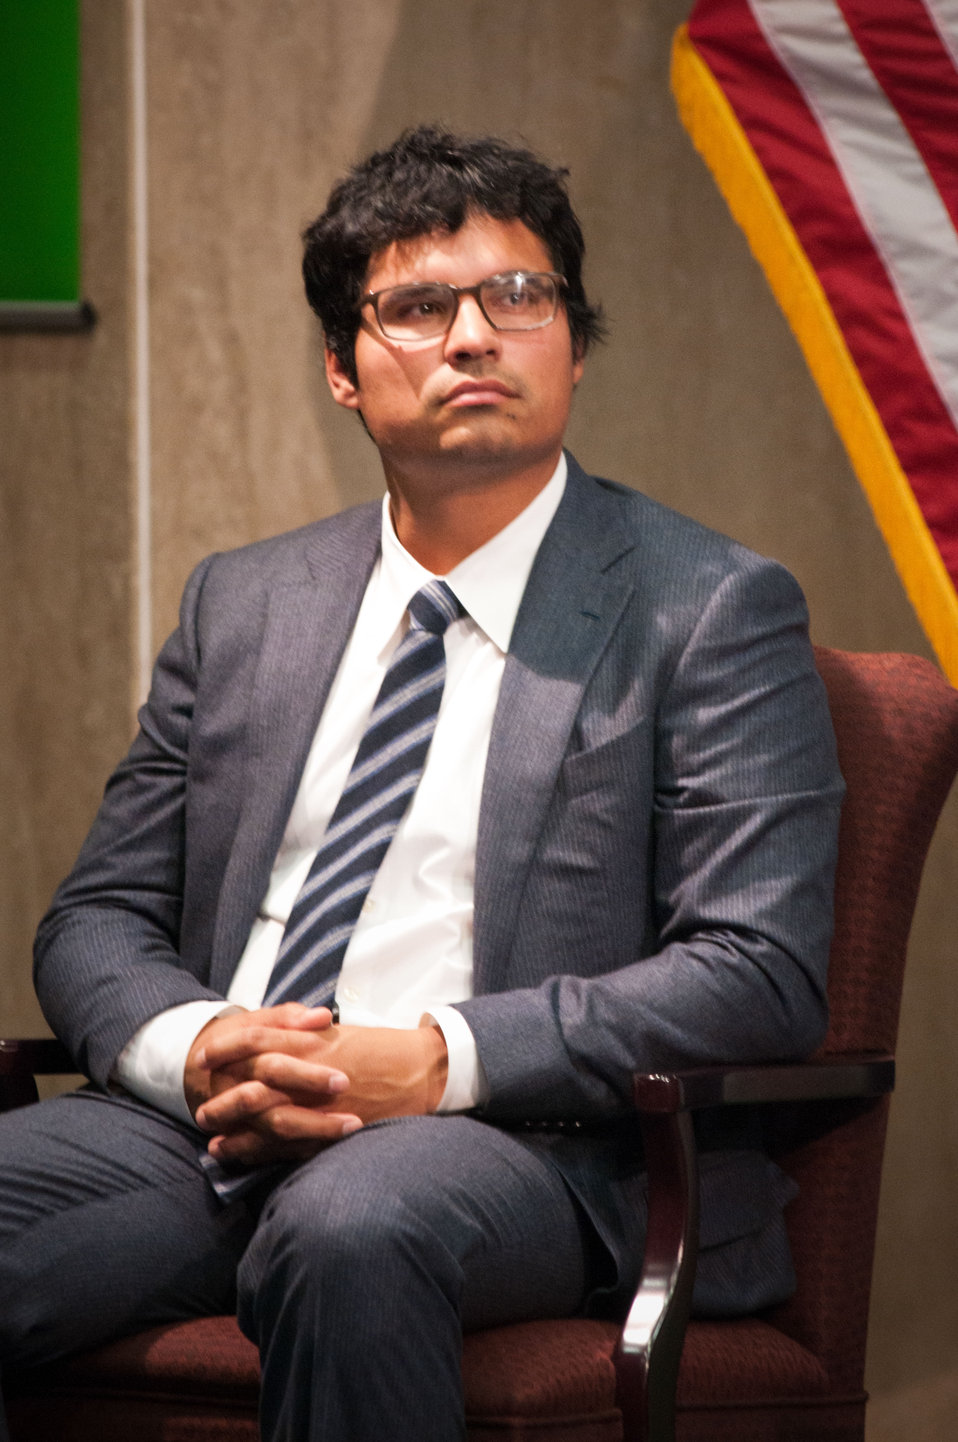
Michael Pena is the actor who will be portraying Cesar Chavez in a biography about the farm workers rights activist was the Master of Ceremonies at the dedication of the Cesar E. Chavez Memorial Auditorium at the United States Department of Labor in Washington, D.C., Monday, March 26, 2012. Chavez was a Mexican-American labor leader who used non-violent methods to fight for the rights of migrant farm workers in the southwestern United States. Chavez founded the Cesar Chavez Foundation, a group that advocates for the rights of farm workers, acting to increase wages and improve the working conditions and safety of farm workers.